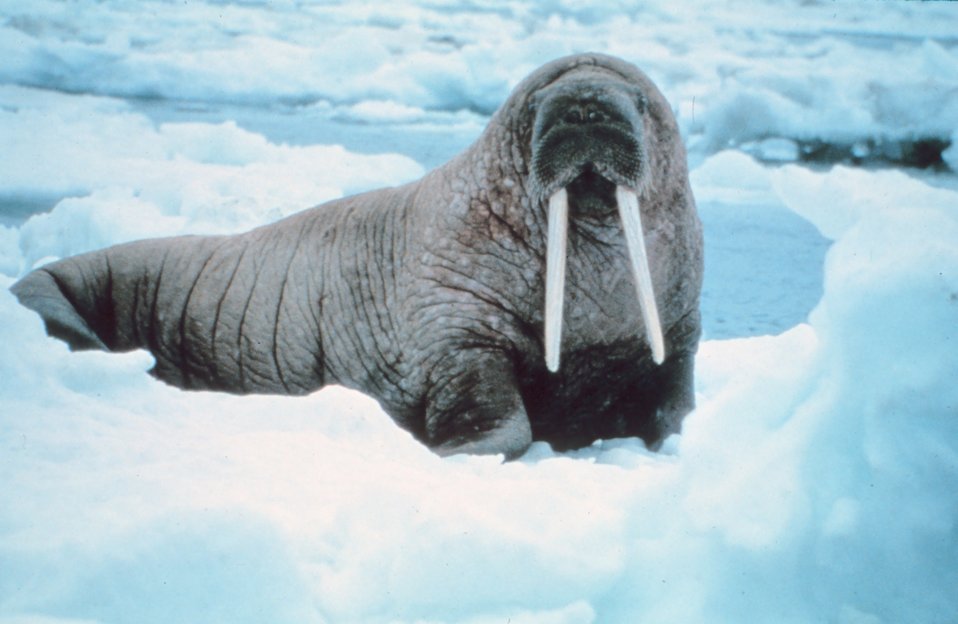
Attentive walrus - Odobenus rosmarus divergens - inspecting photographer.